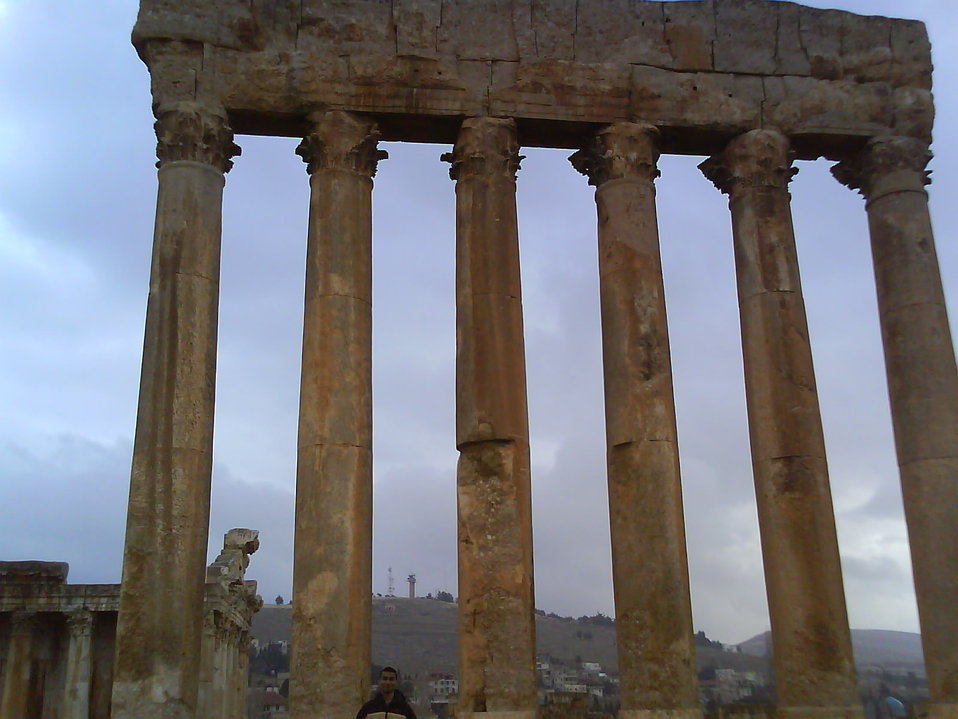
Made by Capt JV Benjamin (14 MARATHA LI)